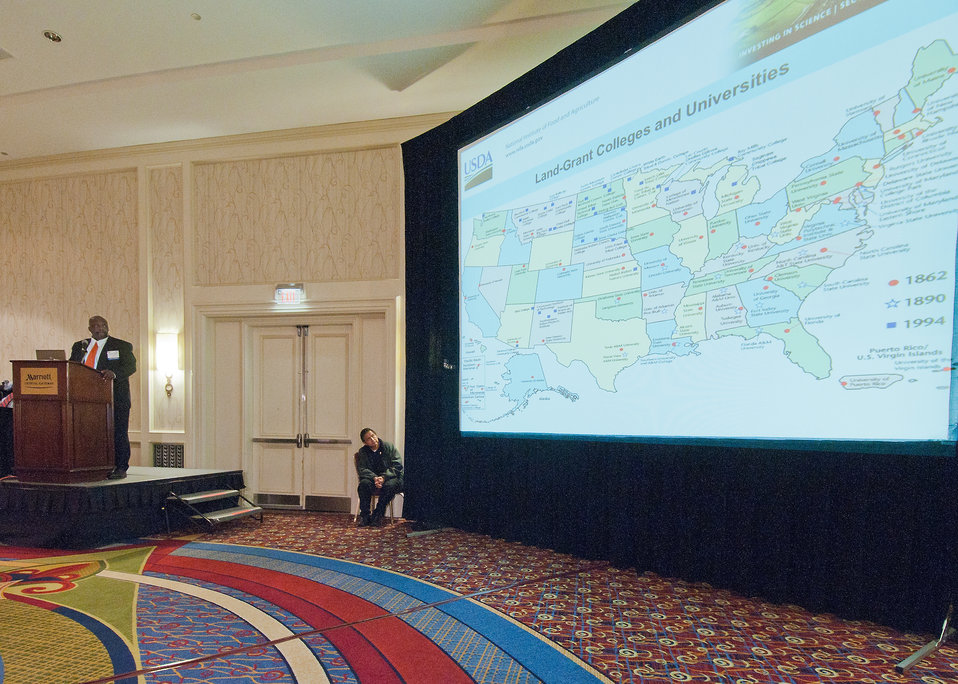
Dennis Ebodaghe, National Program Leader/Small Farms Program, United States Department of Agriculture, National Institute of Food and Agriculture Washington, D.C., spoke during the breakout session Innovative Solutions for Meeting the Challenges of Small and Disadvantaged Farmers at the 2012 Agricultural Outlook Forum, “Moving Agriculture Forward, Growing, Innovating and Celebrating 150 Years” held at the Crystal gateway Marriott Hotel Arlington, Virginia, Friday, February 24, 2012. Ebodaghe described the role of the evolving land grant system in helping to meet the needs of specific stakeholders.